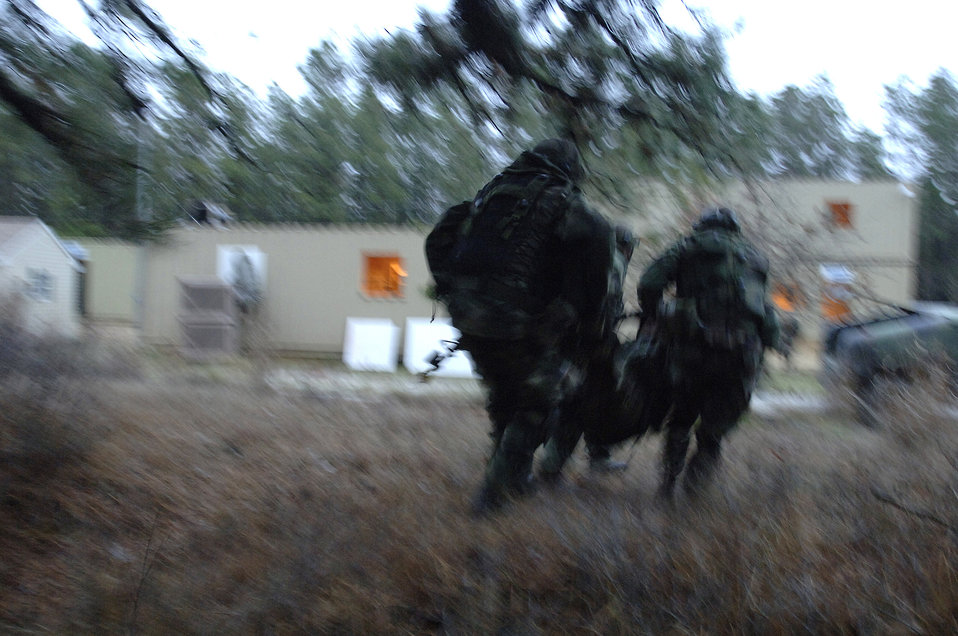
Air Force training makes Airmen safer, more aware

Airmen carry a simulated injured servicemember to safety while taking fire from role-playing insurgents during the Contingency Skills Training course at the Air Mobility Warfare Center at Fort Dix, N.J., Nov. 14.